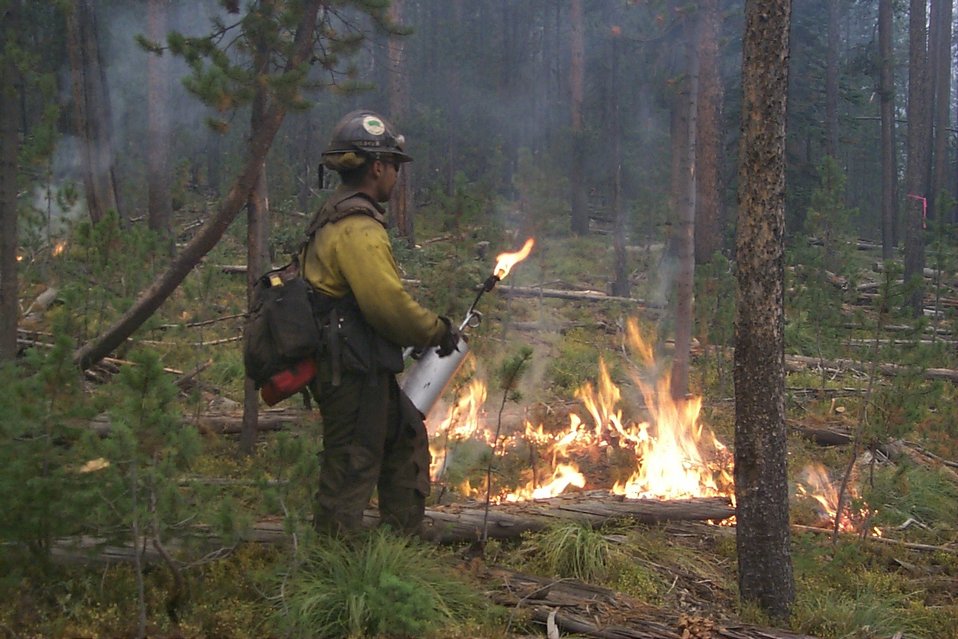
Controlled burn Fire Clearwater Fire Salmon Field Office USRD Upper Snake River District